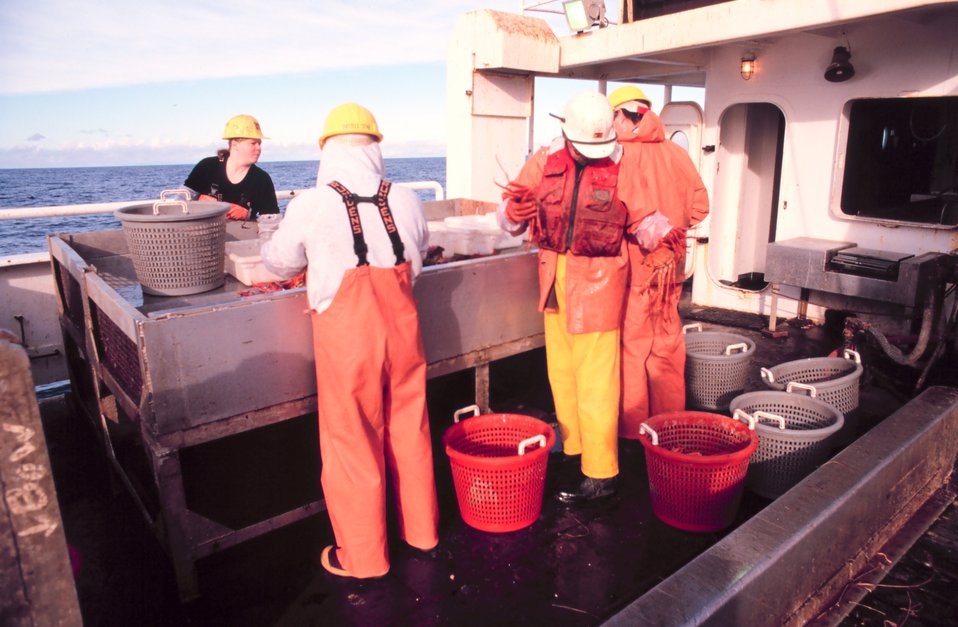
Scientist holding crab